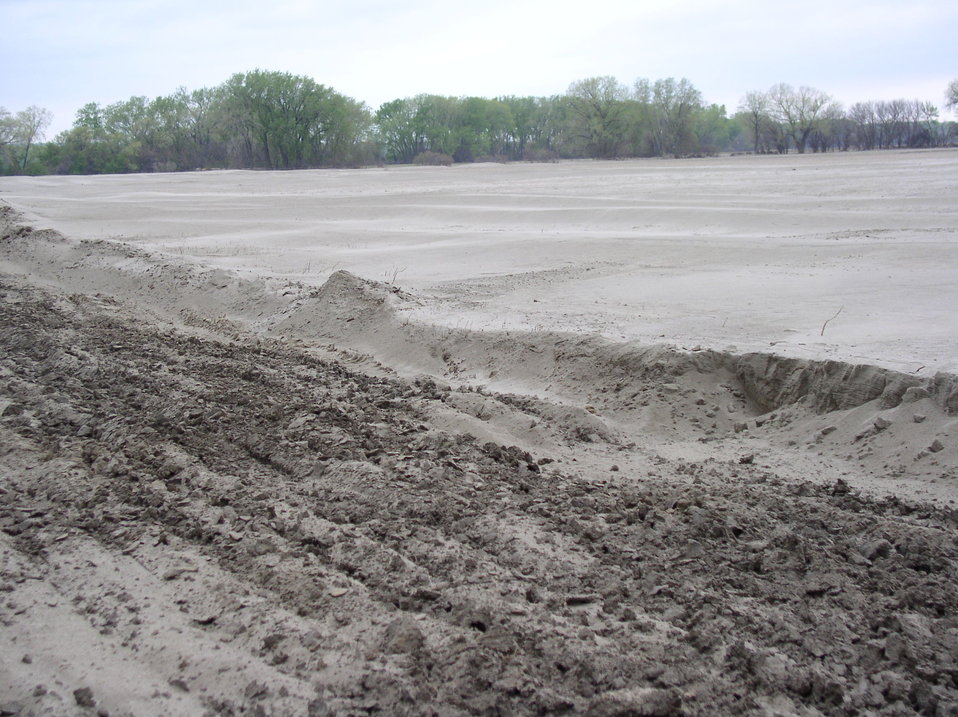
P4120023 Jones Cihak

Sand debris left from the Missouri River flooding in Charles Mix County, SD. The U.S. Department of Agriculture’s (USDA) Farm Service Agency (FSA) Emergency Conservation Program (ECP) provided emergency funding and technical assistance to farmers and ranchers in the county to rehabilitate their farmland damaged by the flood.